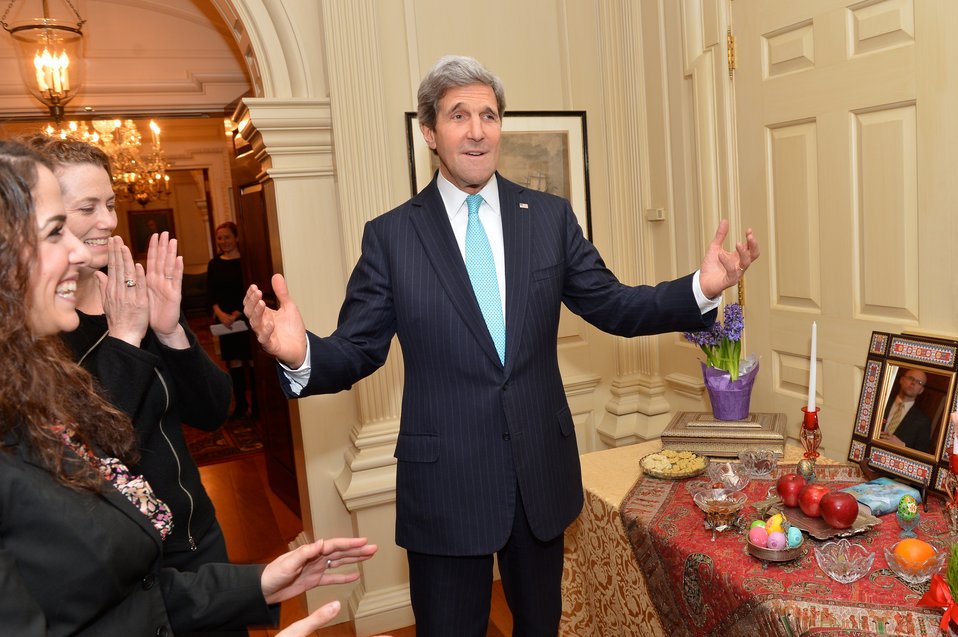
Secretary Kerry Joins Iranian-Americans in Celebrating Nowruz

With members of the Iranian-American community, U.S. Secretary of State John Kerry celebrates Nowruz at the U.S. Department of State in Washington, D.C., on March 20, 2014.